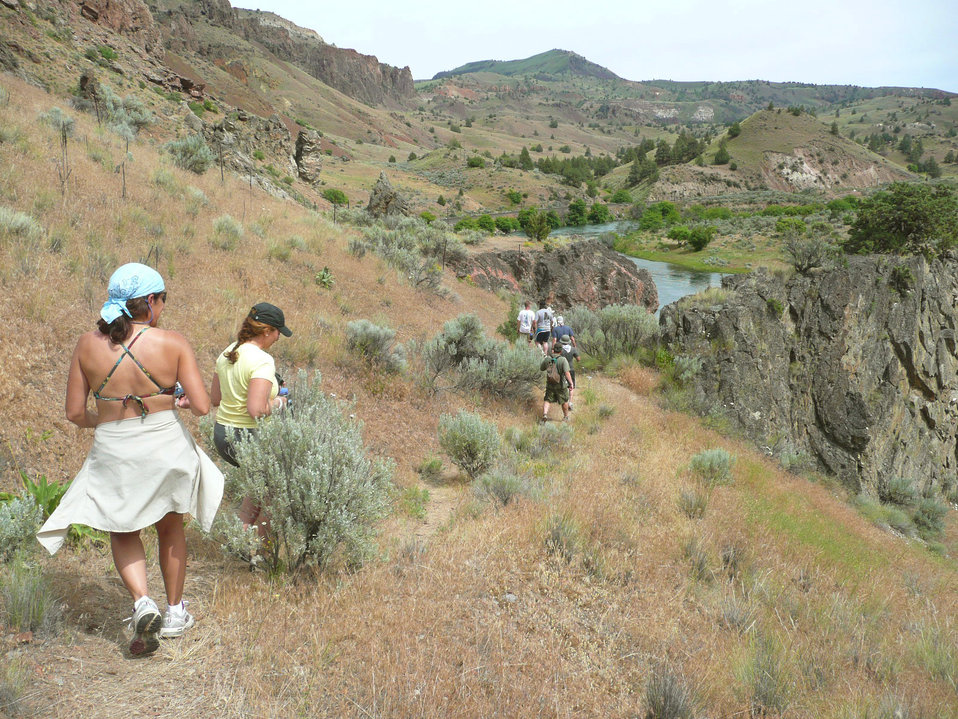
Veterans Outward Bound expedition

Nine veterans and their Outward Bound instructors hiked to a U.S. flag located atop a steep cliff during an Outward Bound expedition June 6 through 10, 2010, on the Lower Deschutes River, Ore.